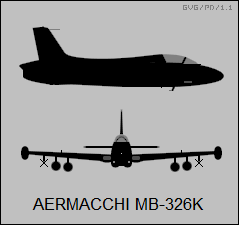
2-view silhouettes of the Aermacchi MB-326K